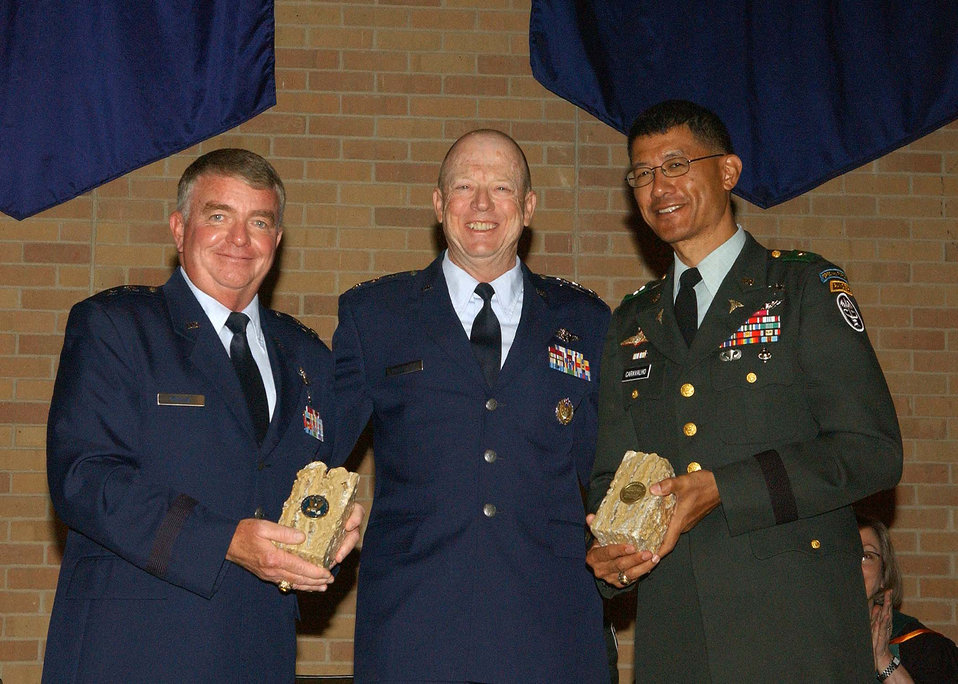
Commanders honor AF Surgeon General

Maj. Gen. Tom Travis (left), 59th Medical Wing commander, and Army Brig. Gen. Joseph Caravalho, Jr. (right), Brooke Army Medical Center commander, present commemorative Texas bookends to Lt. Gen. James Roudebush, the Air Force surgeon general, during the San Antonio Uniformed Services Health Education Consortium awards and graduation ceremony June 5 at the University of Texas Health Science Center at San Antonio. During the graduation portion of the ceremony, 243 graduates from 36 graduate medical education programs and 50 graduates from 13 allied health care programs received diplomas.